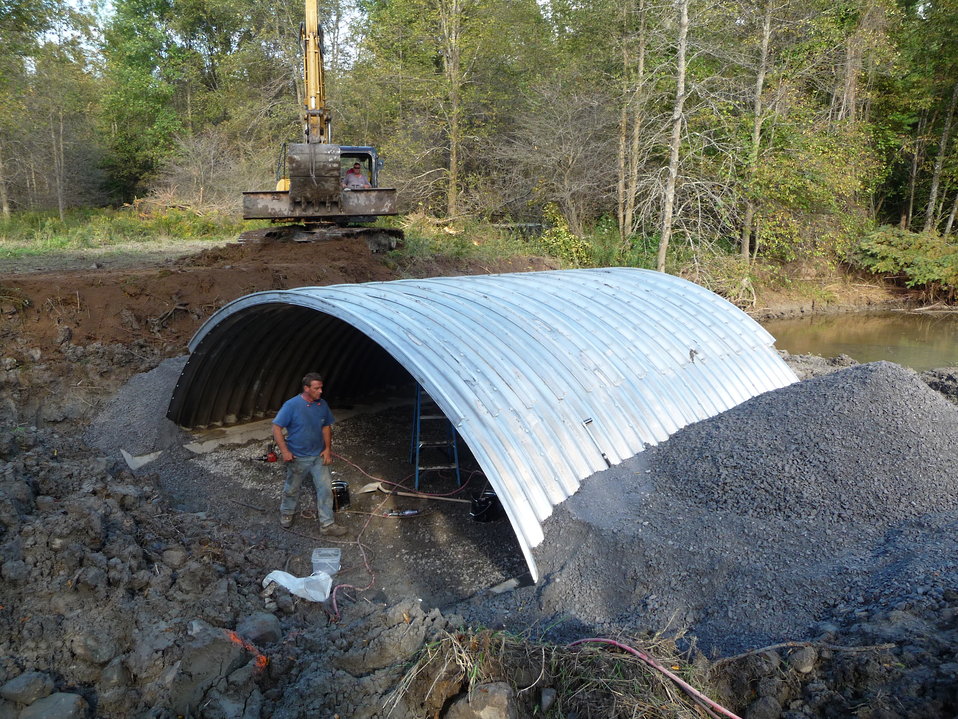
Little Sucker Brook: Installing fish passage

The metal bottomless arch and concrete foundation will simulate a natural stream bottom and ease fish passage.

The landowner agreed to uphold and not disturb the restoration for 10 years.